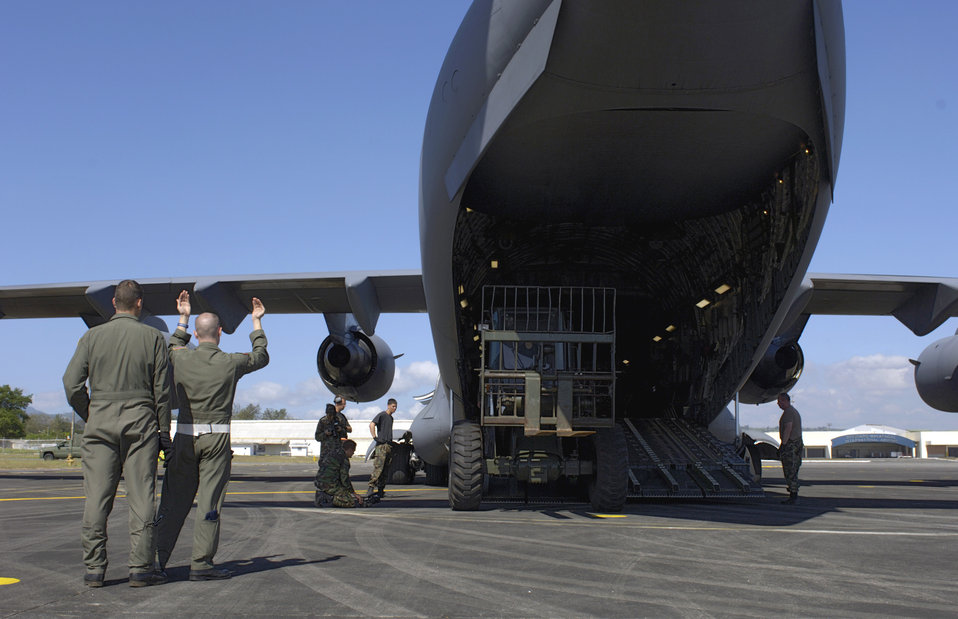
Hands-on training

MACTAN AIR BASE, Philippines (AFPN) -- Staff Sgt. Ryan Page and Tech. Sgt. Ken Bragg marshal a forklift off of a C-17 Globemaster III Feb. 22. The composite C-17 squadron of active duty and Hawaii Air National Guard flew their first contingency response mission to deliver relief supplies to the Philippines. The Airmen are with the 535th Airlift Squadron.